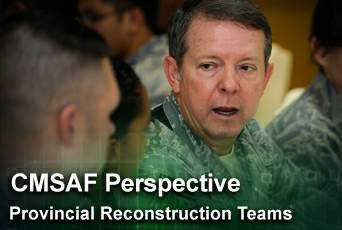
'Perspective' focuses on reconstruction teams

In the newest